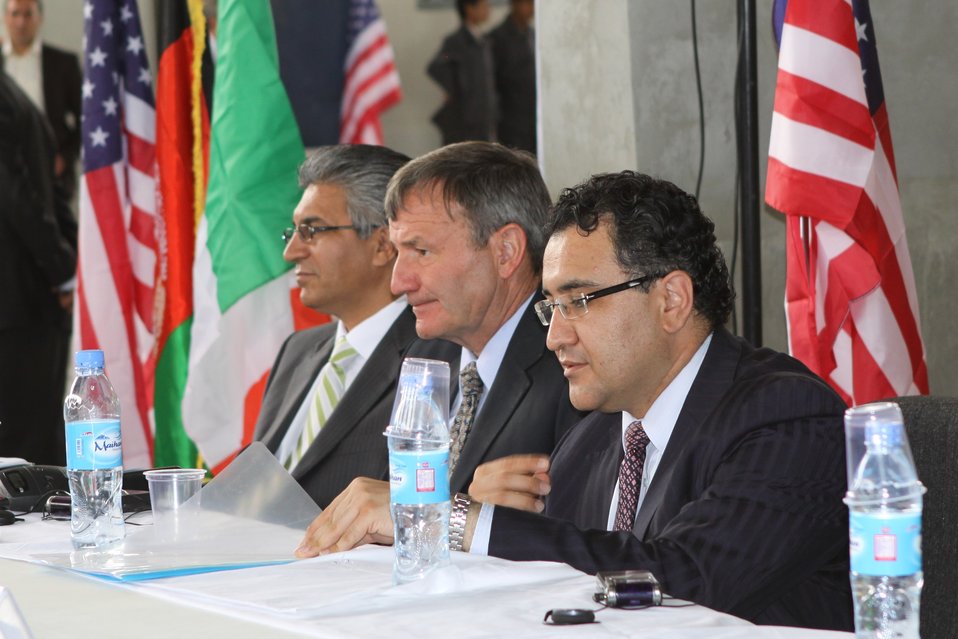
100525 Hirat Marble Conference 237